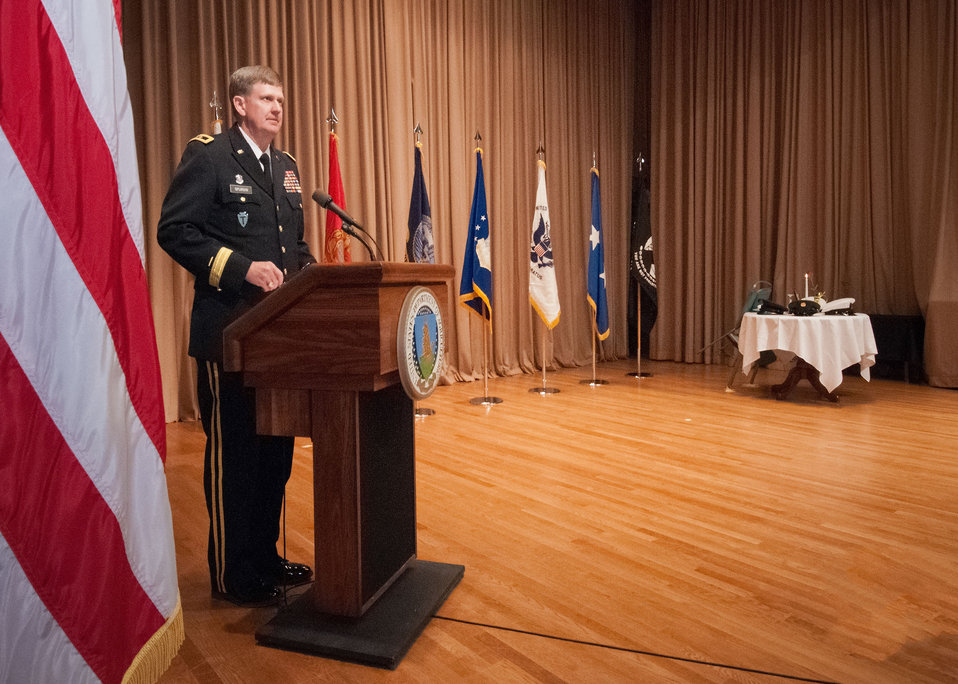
Master of Ceremony Major General Eddy M. Spurgin (Ret.) opened the U.S. Department of Agriculture Veterans Day Observance: Honoring All Who Served, in Washington, D.C. on Wednesday, Nov. 7, 2012. Spurgin currently serves as the District Conservationist, Natural Resources Conservation Service in Big Spring, Texas. He served over 30 years in the Texas Army National Guard and commanded from the company level to Division Commander. He recently commanded the 36th Infantry Division, Texas Army National Guard from April 2009 to January 2012 and served as the Commanding General, United States Division-South in Basra, Iraq from 2 Jan 2011 to 7 Sept 2011, during OPERATION NEW DAWN.